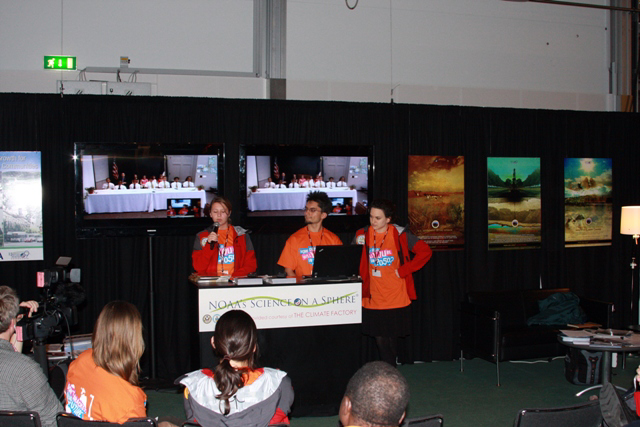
Youth Delegation DVC at COP-15

Members of the youth delegation at COP-15 participate in a digital video conference with U.S. students in Washington and Virginia sponsored by the U.S. Forest Service during COP15 (Conference of the Parties to the UN Framework Convention on Climate Change) in Copenhagen, Denmark December 10, 2009.